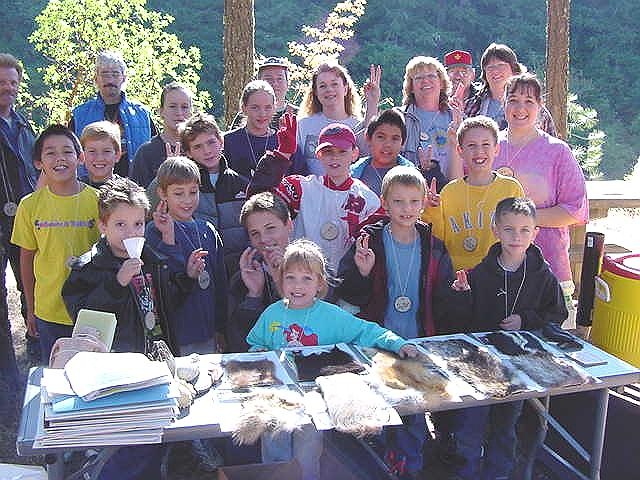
Group at public Lands Day event examining skins, fossils, and skulls.